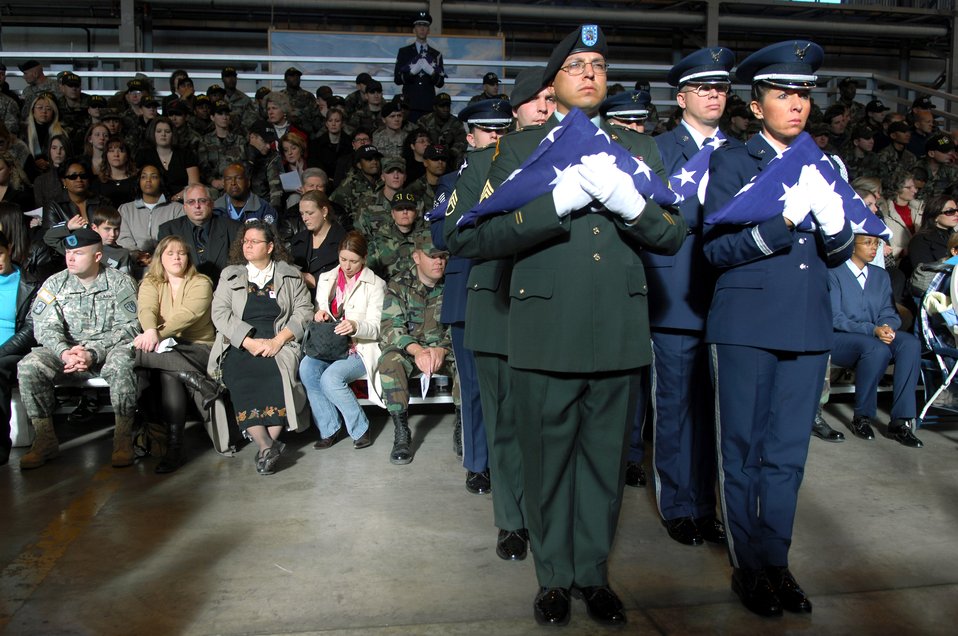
Fallen Airmen, Soldiers honored at Aviano

Air Force and Army honor guardsmen stand with folded flags during a memorial ceremony Nov. 15 at Aviano Air Base, Italy, in honor of the six servicemembers who were killed when a U.S. Army UH-60 Black Hawk helicopter attached to the 1st Battalion, 214th Aviation Regiment crashed Nov. 8, 22 miles southwest of Aviano, Italy.